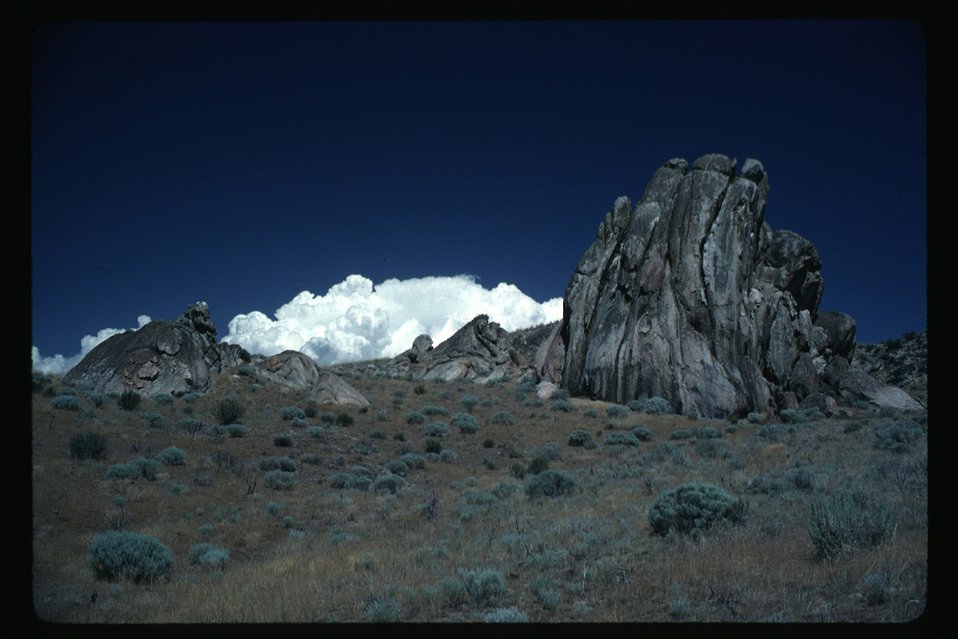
Danskin Mountains Four Rivers Field Office LSRD Lower Snake River District